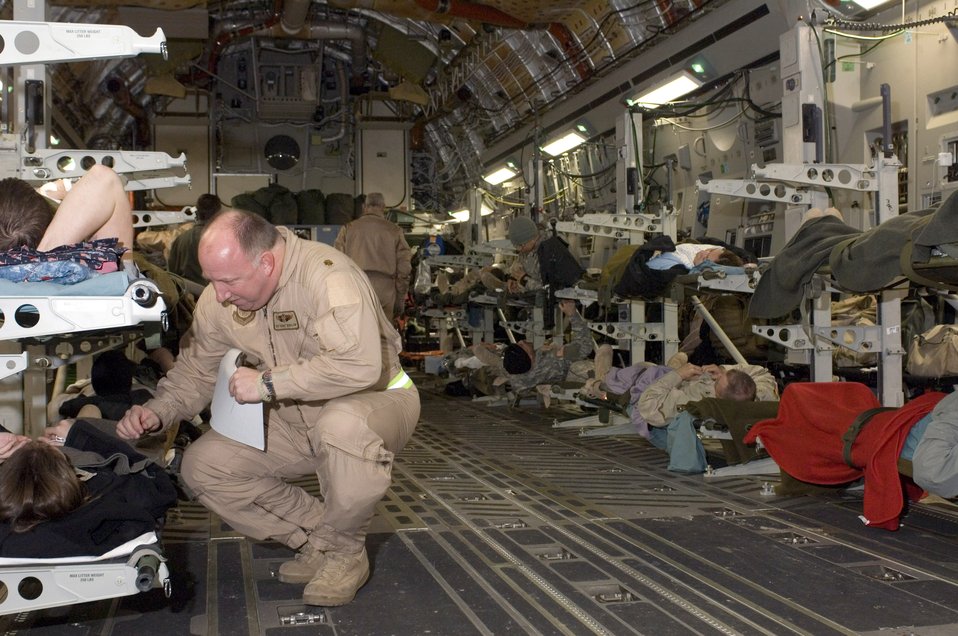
Air care

OVER IRAQ -- Maj. Ken Winslow talks with a patient on a C-17 Globemaster III. Major Winslow is a Reservist from McChord Air Force Base, Wash deployed with the 791st Expeditionary Aeromedical Evacuation Squadron. The 791st transports servicemembers to health-care facilities in Germany and the U.S.